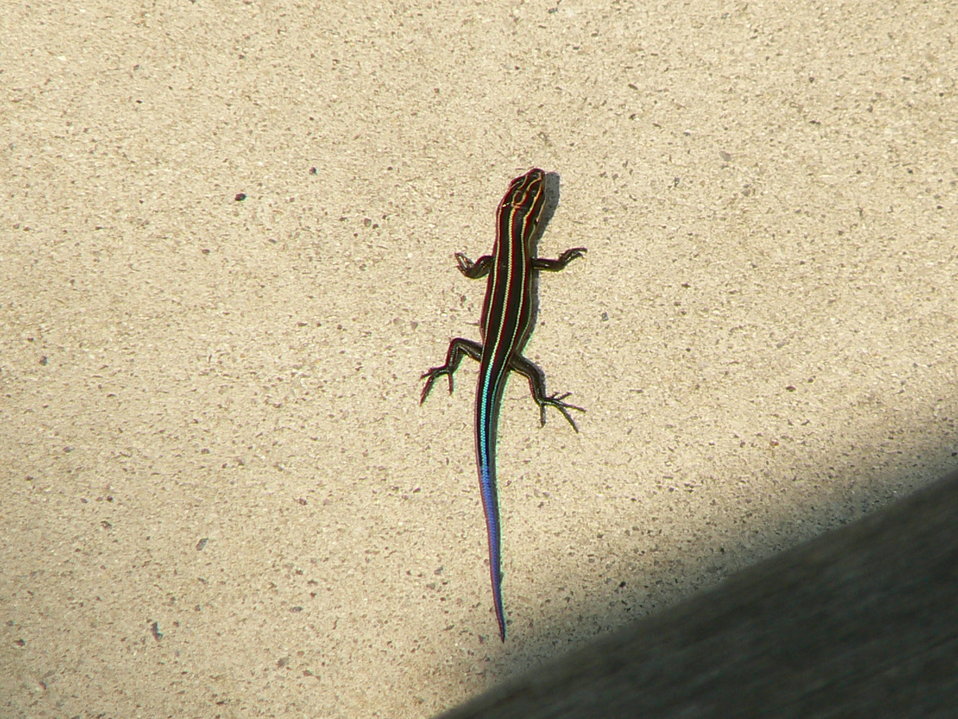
Blue-tailed skink at Cape May National Wildlife Refuge.